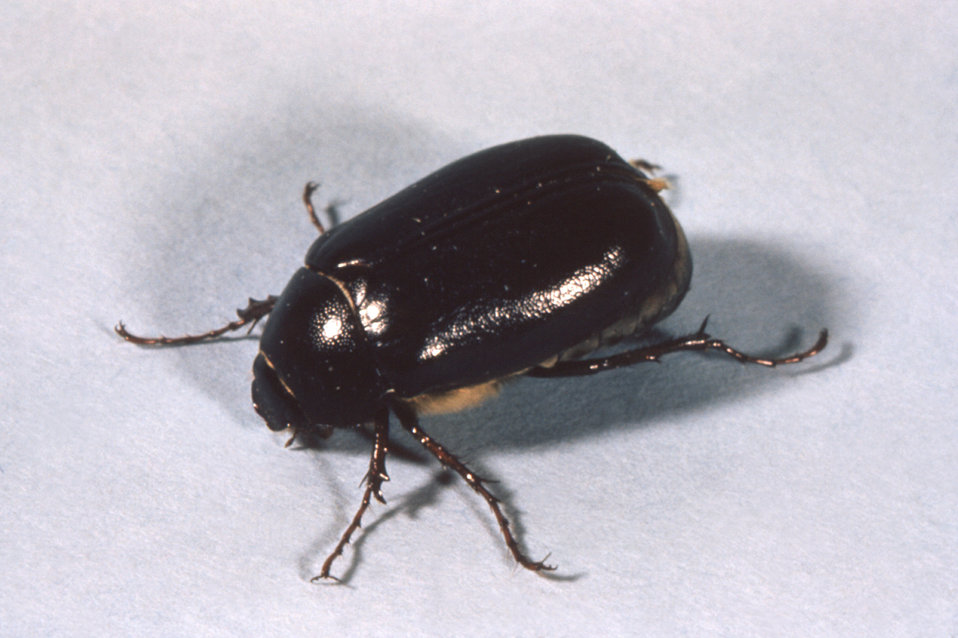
This photograph of a beetle was taken during a 1972 study of disease carriers, and pests of migrant labor camps.